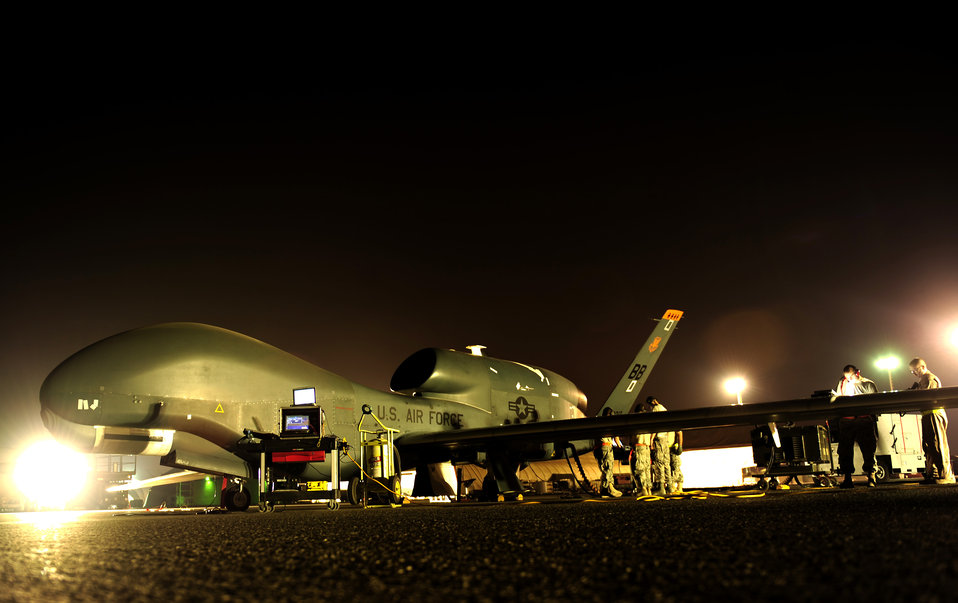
Global Hawk prepares for flying mission

An RQ-4 Global Hawk gets prepared for a mission while deployed Nov. 23, 2010, at an air base in Southwest Asia. The RQ-4 and the Airmen are assigned to the 380th Expeditionary Operations Group.